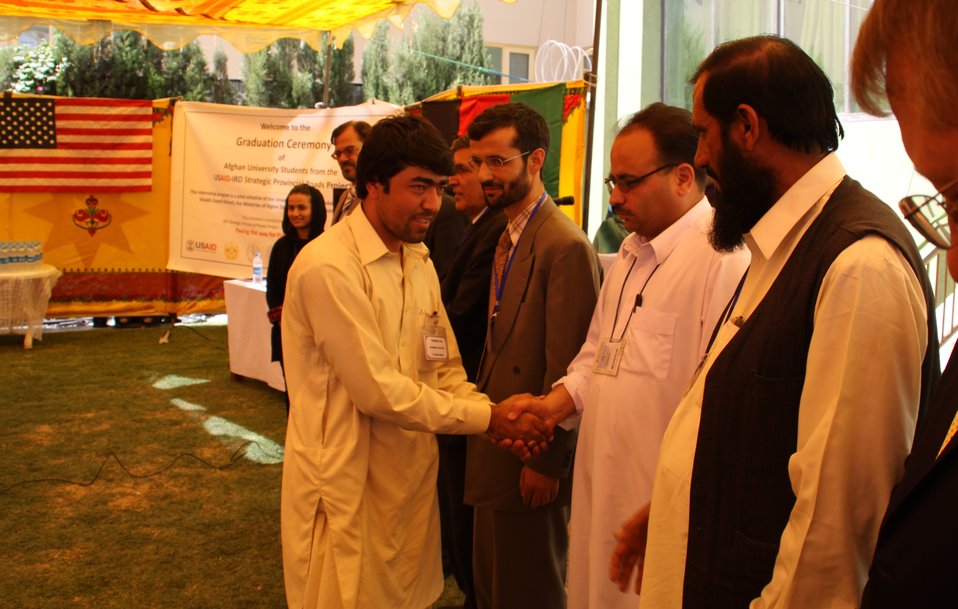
محصلین پوهنتون کندهار انترنشپ انجنیری را تکمیل نمودند